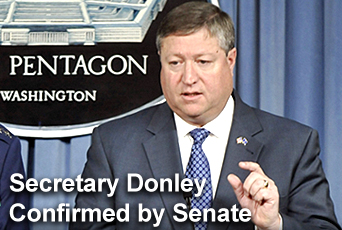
Senate confirms Donley to be next secretary of Air Force

Acting Secretary of the Air Force Michael B. Donley was confirmed to be the 22nd Air Force secretary in an Oct. 2 Senate confirmation vote in Washington, D.C. Secretary Donley had been designated by the president to begin serving as acting secretary on June 21.